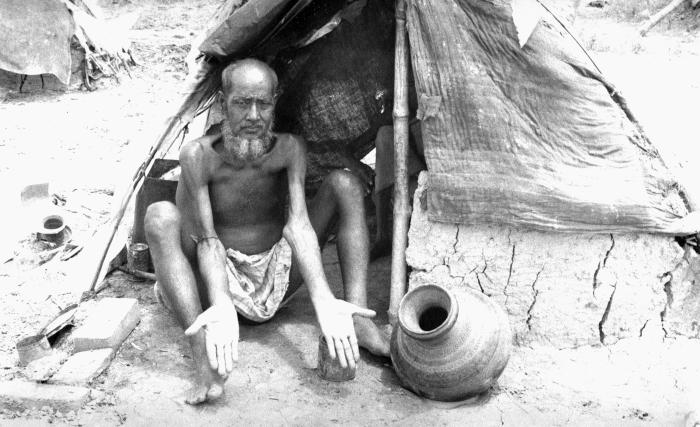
Though difficult to see clearly in this 1975 photograph, this Bangladesh man was holding up his hands, palms up, in order to display the scars subsequent to his having suffered through a case of smallpox. The scarring on his face and arms, including his palms, and soles, is the characteristic distribution pattern of the smallpox maculopapular rash.